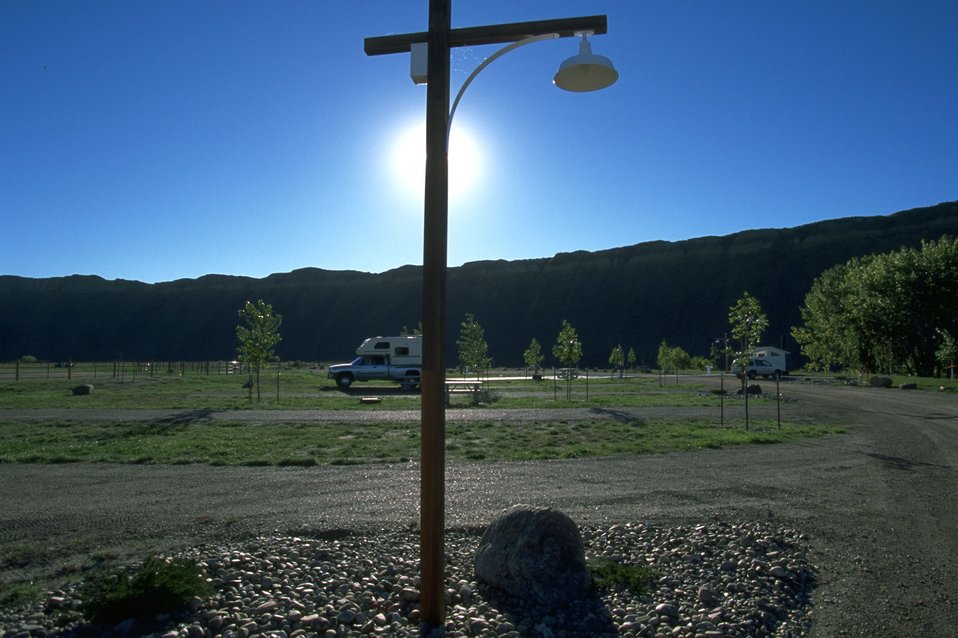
Canoe launch campgrounds at Fort Benton fairgrounds